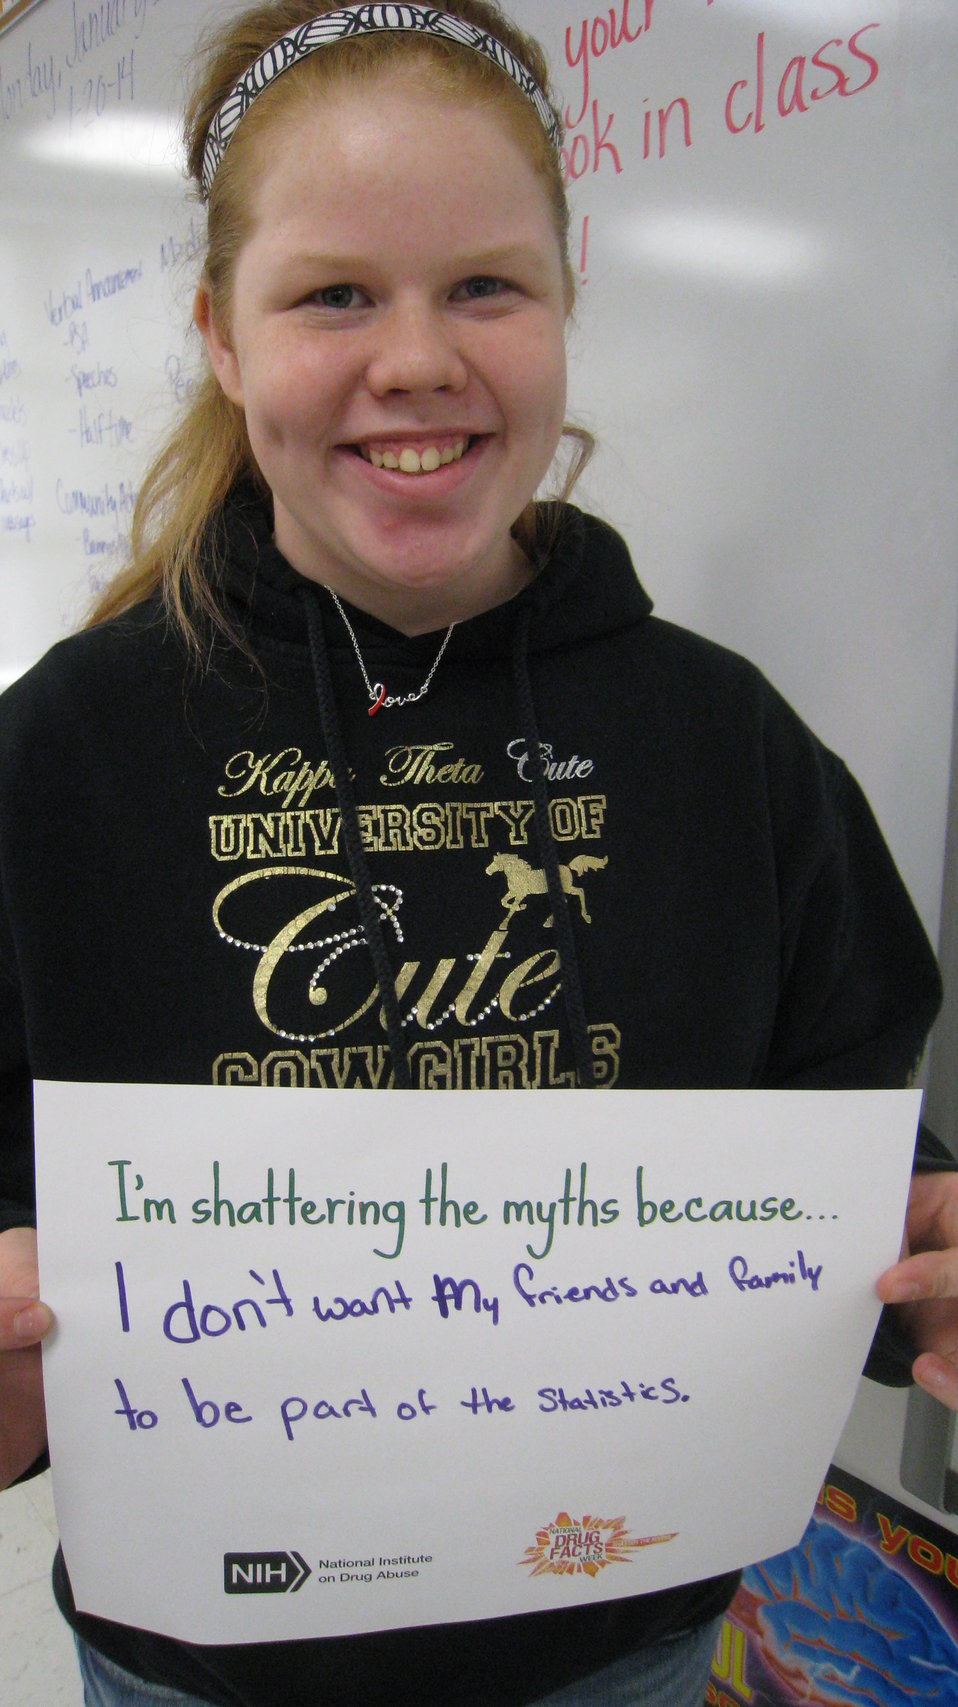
I'm Shattering the Myths Because...

Teenagers from the Van Buren County SAFE Coalition's, Youth Leadership Council (YLC) in Keosauqua, Iowa participate in various events during National Drug Facts Week, 2014.